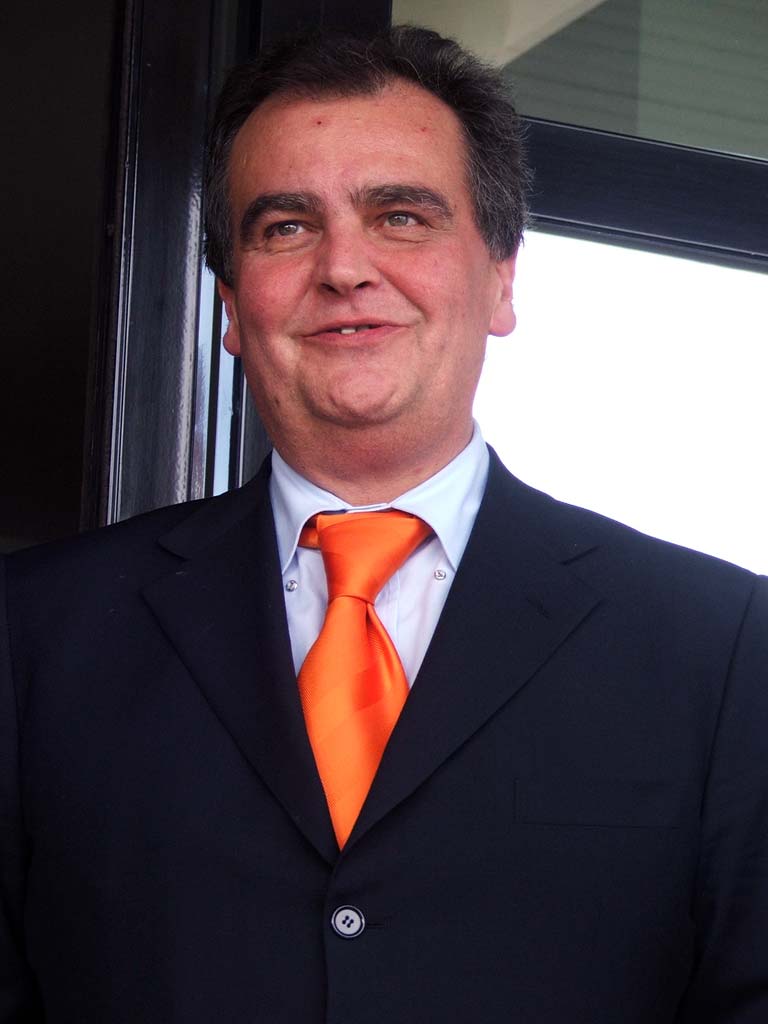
Italiano: Il senatore italiano Roberto Calderoli.